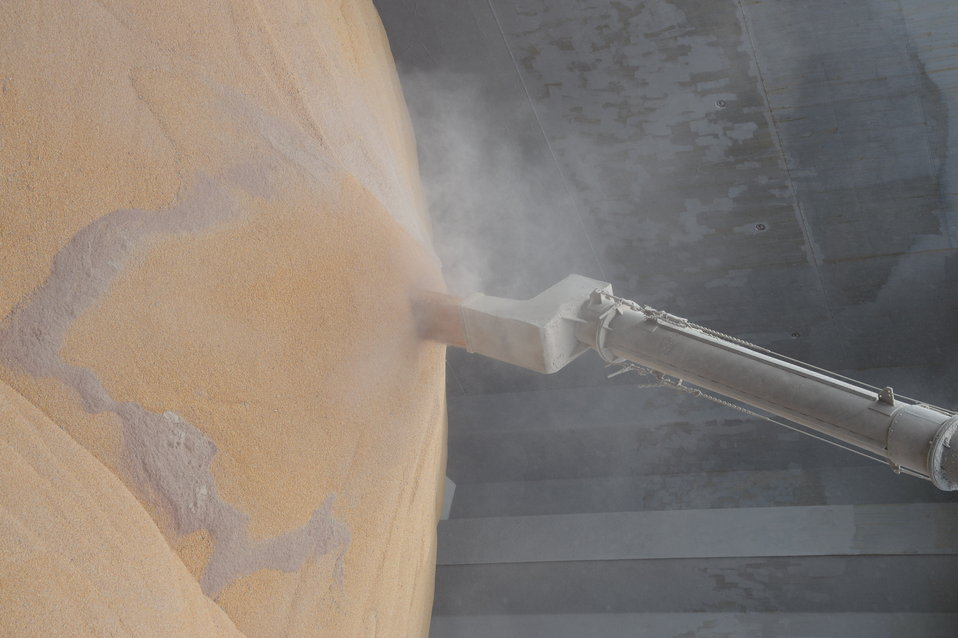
Grain is transferred from barges to storage facilities near the Port of New Orleans in New Orleans, LA on Tuesday, Nov. 19, 2013.